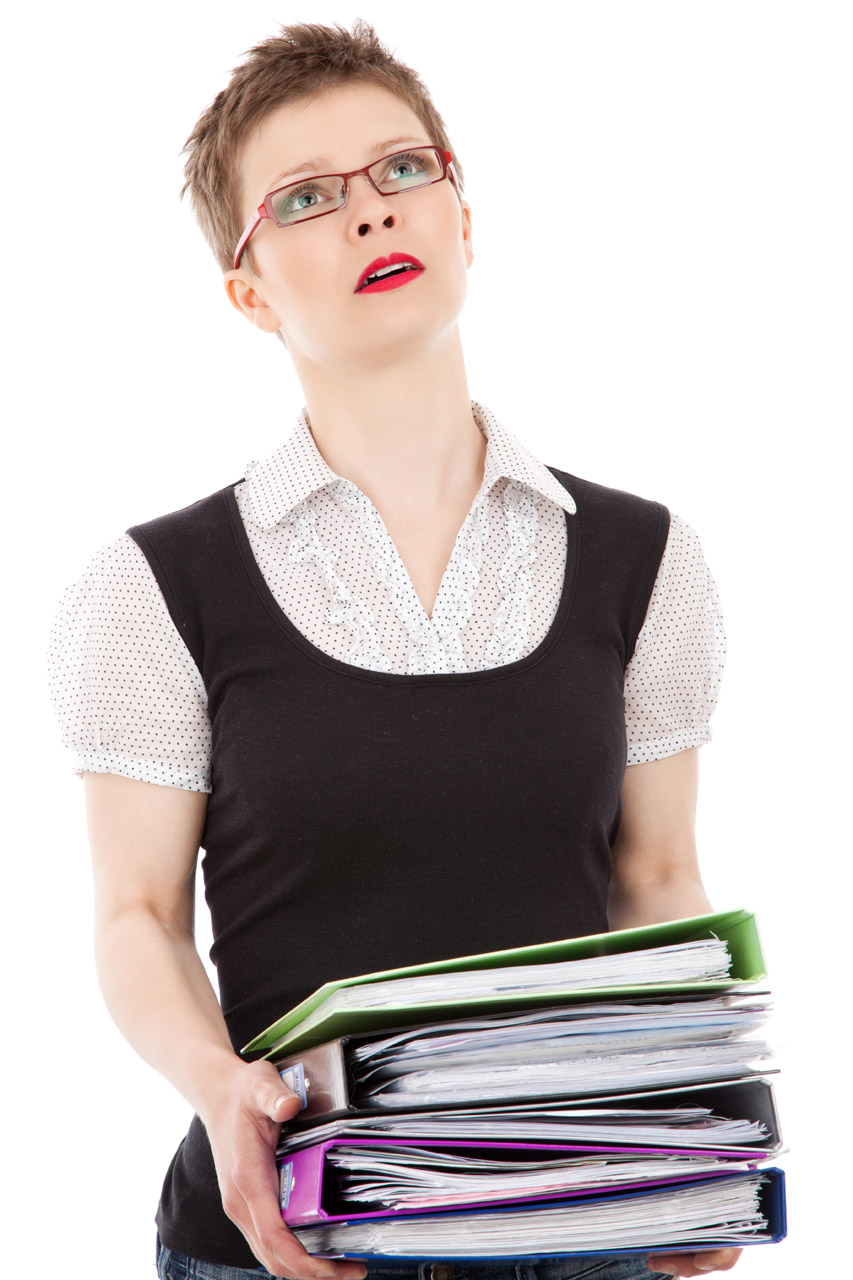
Busy clerk

Young woman overwhelmed with work isolated on white background - jana svojsova.